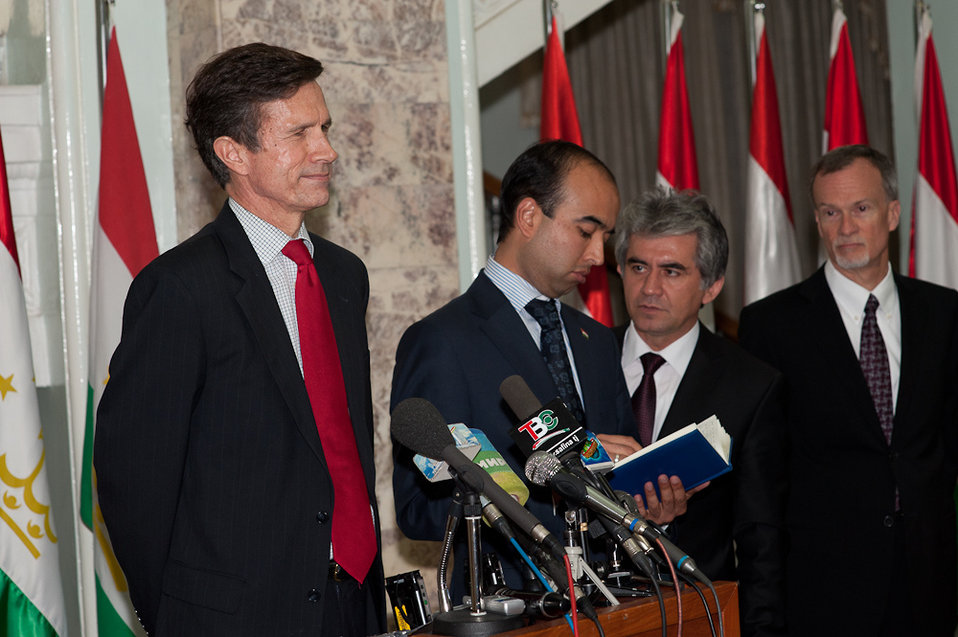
Assistant Secretary Blake Leads U.S. Government-Interagency Delegation to U.S.-Tajikistan Annual Bilateral Consultations

U.S. Assistant Secretary of State for South and Central Asian Affairs, Robert O. Blake, Jr. leads the U.S. government-interagency delegation to the second U.S. - Tajikistan Annual Bilateral Consultations in Dushanbe, Tajikistan, April 11 - 12, 2011. [Damian Wampler/ State Department photo/ Public Domain]